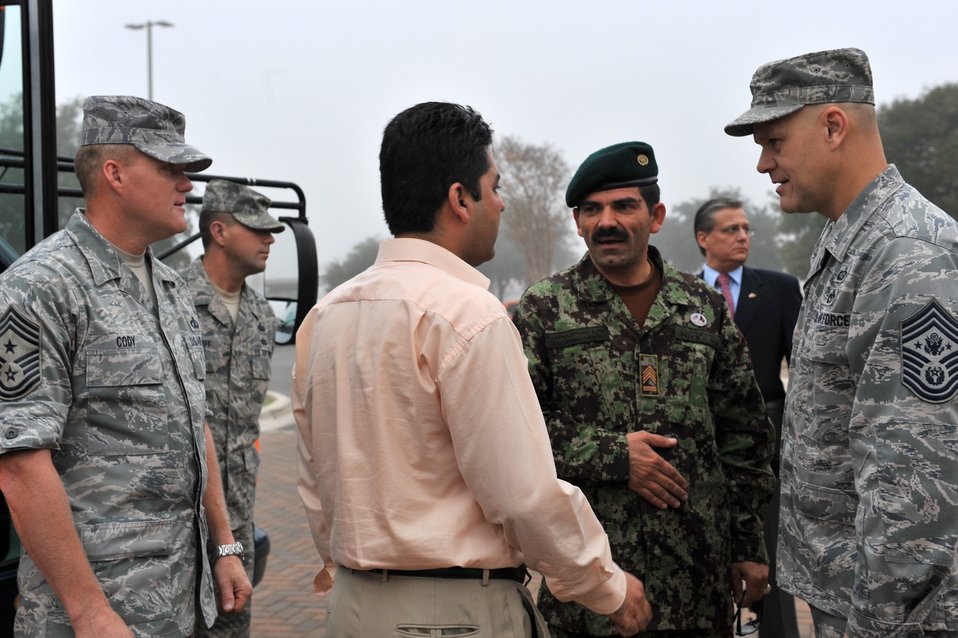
Chief Roy

Chief Master Sgt. of the Air Force James A. Roy greets Eid Mohammad, the command sergeant major of the Afghan air force, Oct. 27, 2010, at Lackland Air Force Base, Texas.